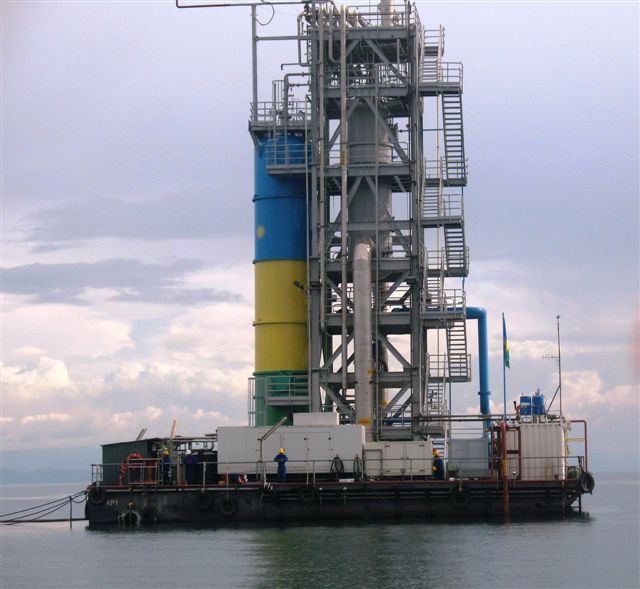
Deputy Secretary Neal Wolin’s trip to Africa 2009

The methane extraction platform at Lake Kivu. Based on the success of this pilot, ContourGlobal – a U.S. power developer active in developing countries – is constructing a $325 million, 100MW power plant at Lake Kivu that will help address Rwanda’s enormous power needs.